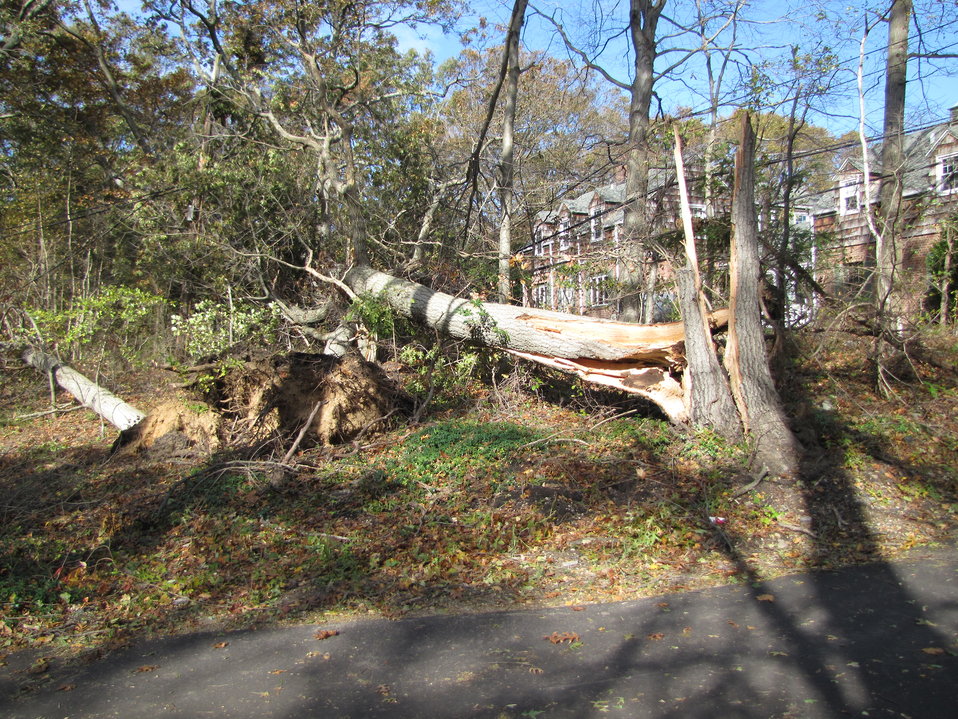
Power line damage at Target Rock National Wildlife Refuge (NY)

Some of the extensive power line damage at Target Rock National Wildlife Refuge, part of the Long Island National Wildlife Refuge Complex.